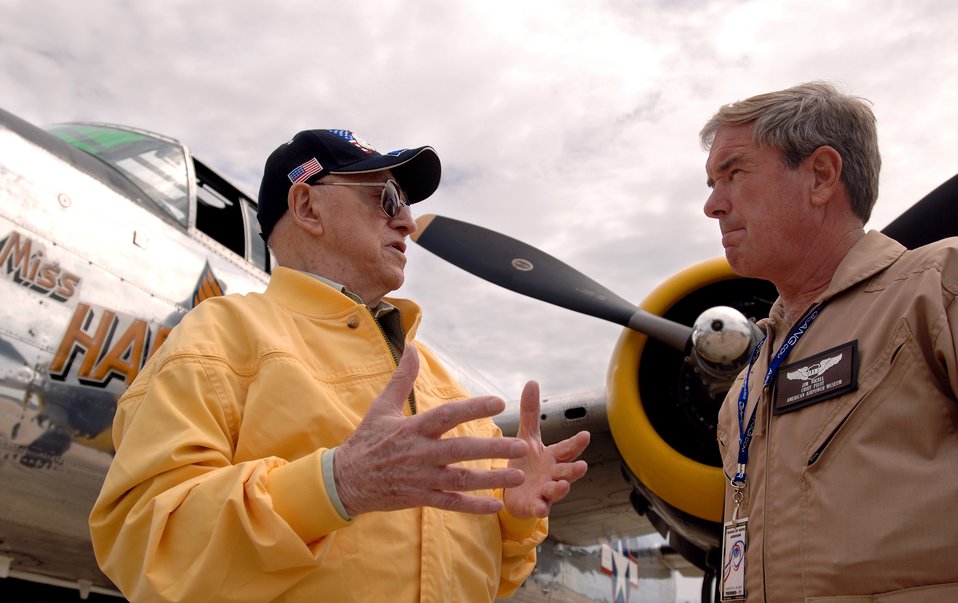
Army Air Corps veteran talks about war experience at air show

World War II veteran Robert McNally talks with Jim Vocell Aug. 19 at Pease Air National Guard Base at Portsmouth, N.H. Mr. McNally, 81, was a guest attending the 2007 Wings of Hope Air Show with hopes of being reunited with old friends. The 2007 Wings of Hope Air Show at Pease ANGB is in conjunction with Air Force Week New England. Mr. Vocell is from the American Airpower Museum and pilot of the